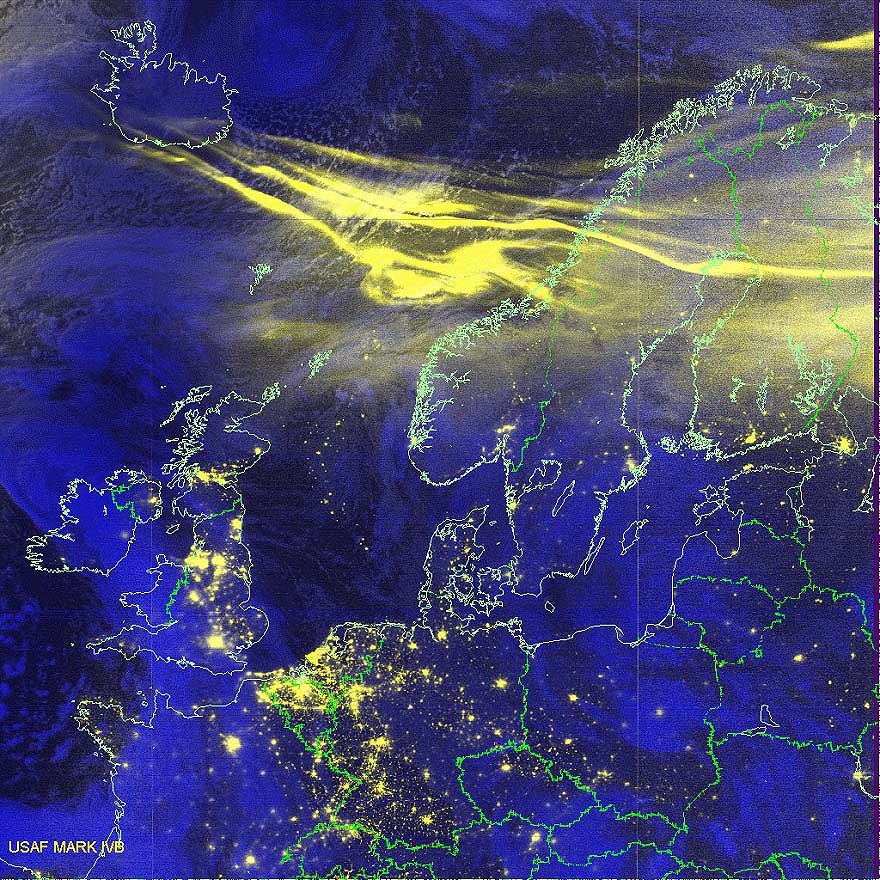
Northern lights

COMPOSITE IMAGE -- This Defense Meteorological Satellite Program satellite network image uses a combination of infrared data with a specialized visual sensor that can see lights at night. The yellow streak shows a vigorous aurora over Norway and Sweden on Oct. 30.